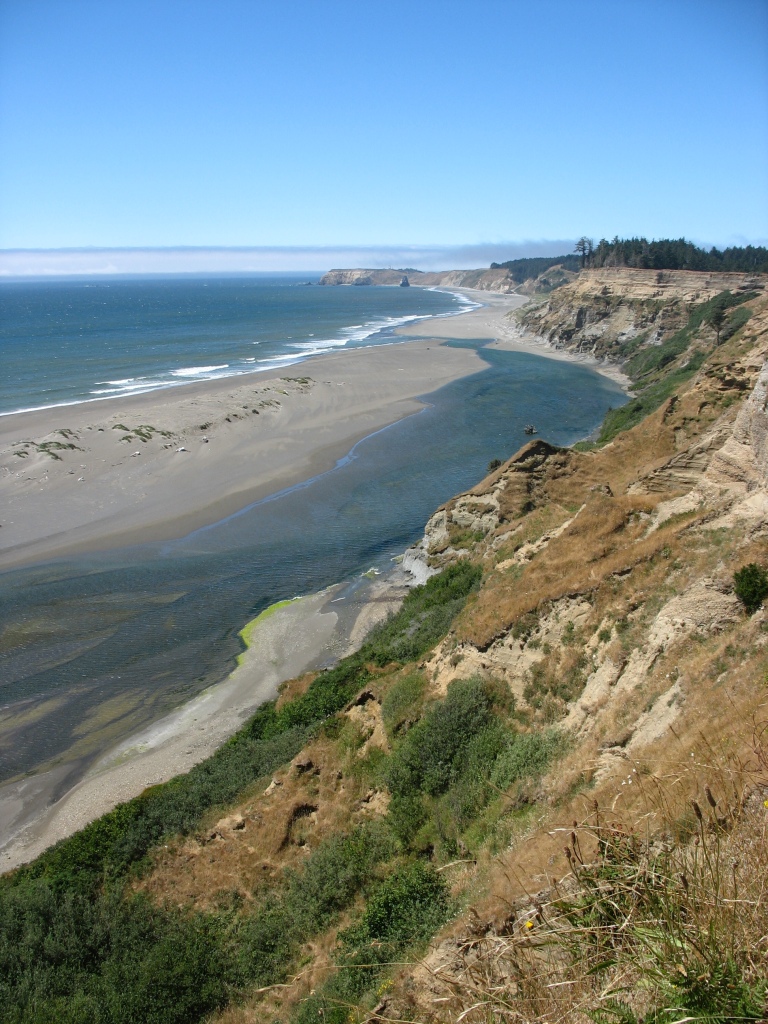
Elk River Spit, Oregon

US Fish and Wildlife Service Coastal Program is working with partners to remove non-native beach grass and restore nesting and wintering habitat for western snowy plovers.